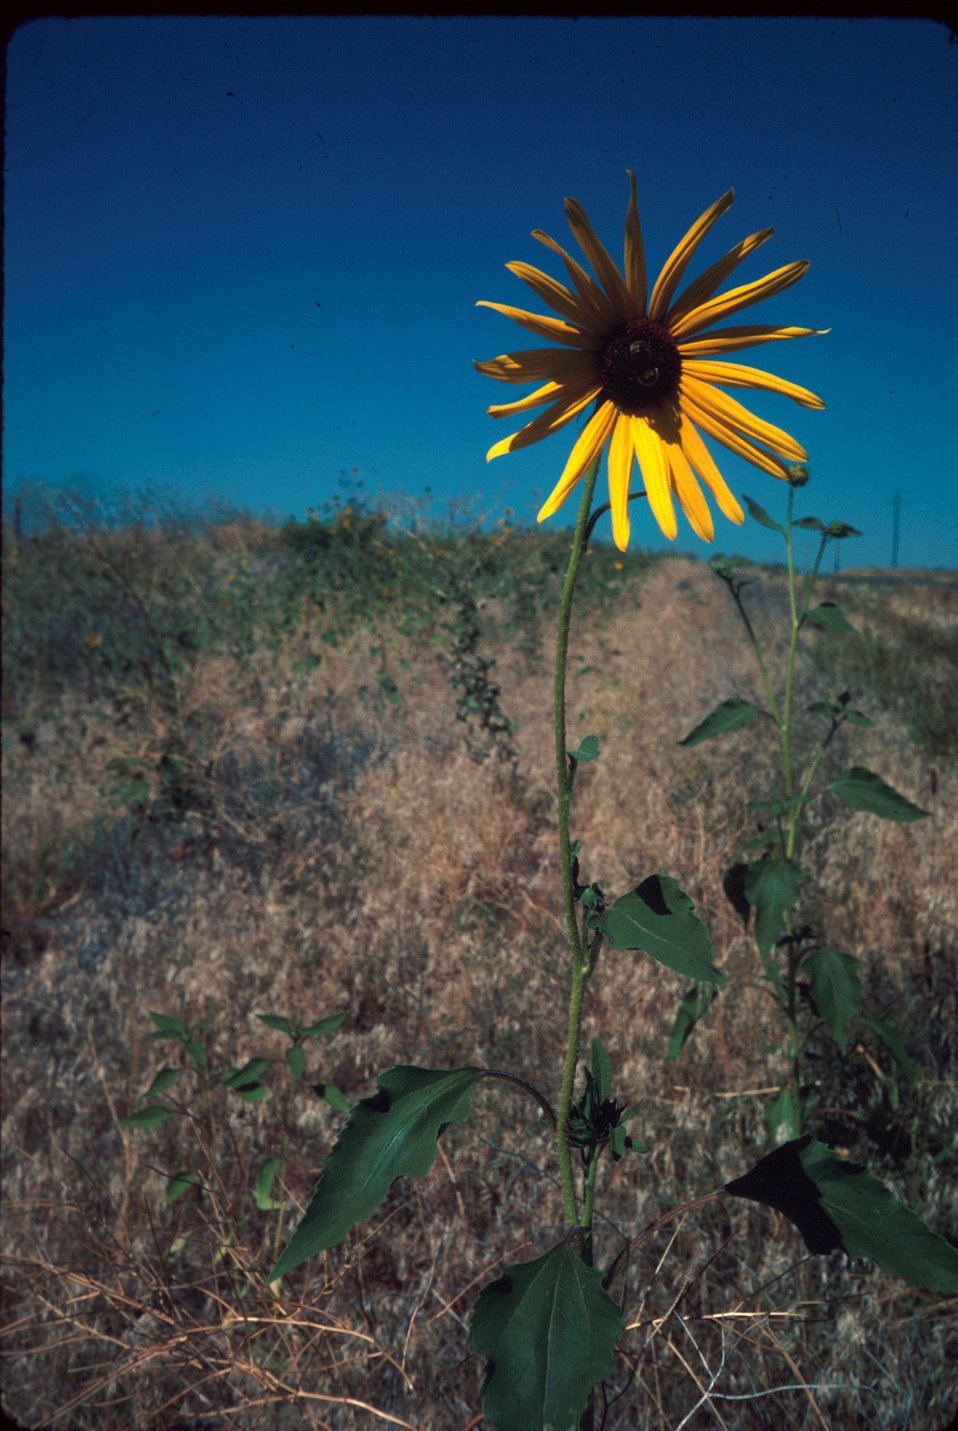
Sunflower Helianthus annulus Wildflower